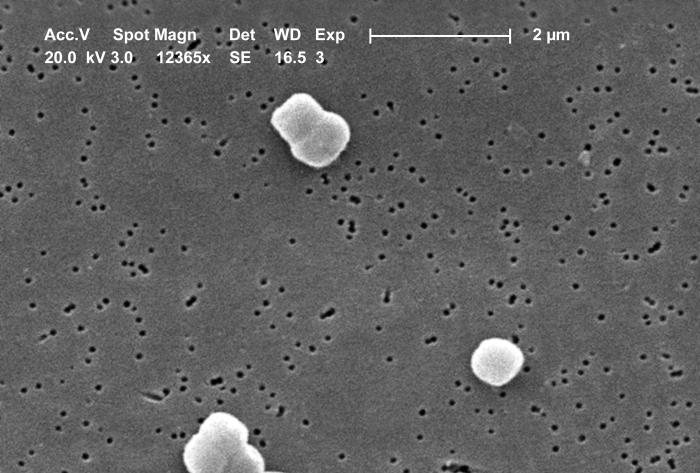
This SEM depicts a number of Gram-negative, non-motile Acinetobacter baumannii bacteria; Mag - 12365x.